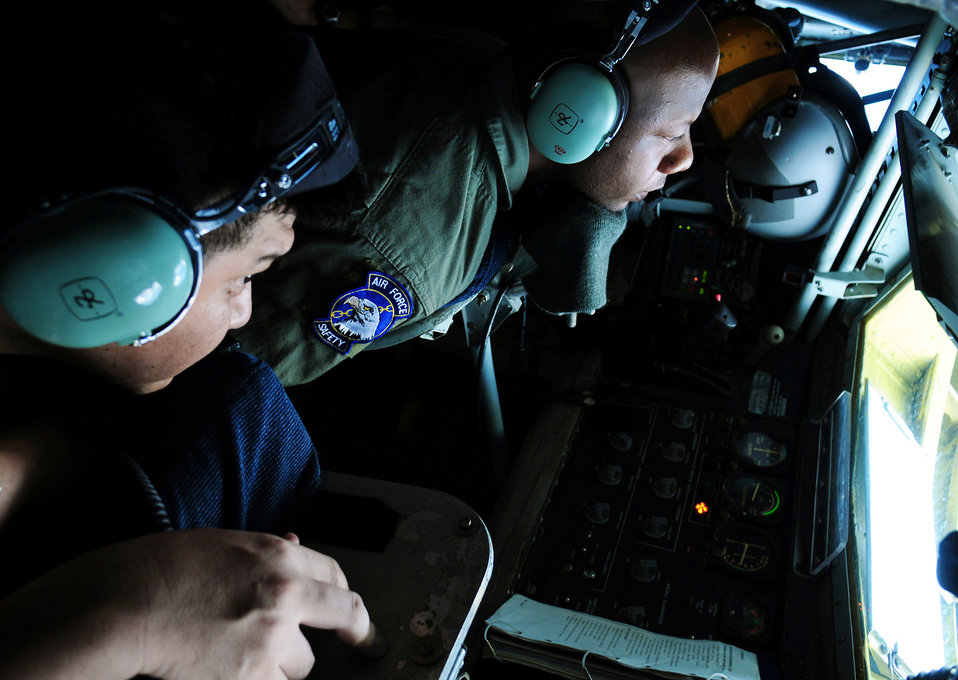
U.S., Japanese F-15 pilots train for Red Flag-Alaska

Staff Sgt. Ron McKinney guides the KC-135 Stratotanker boom for a Japan Air Self Defense Force F-15 as the pilot practices air refueling July 30 off the coast of Japan. The training is in preparation for JASDF participation in Red Flag-Alaska this year. Sergeant McKinney is a KC-135 boom operator with the 909th Air Refueling Squadron, Kadena Air Base, Japan.